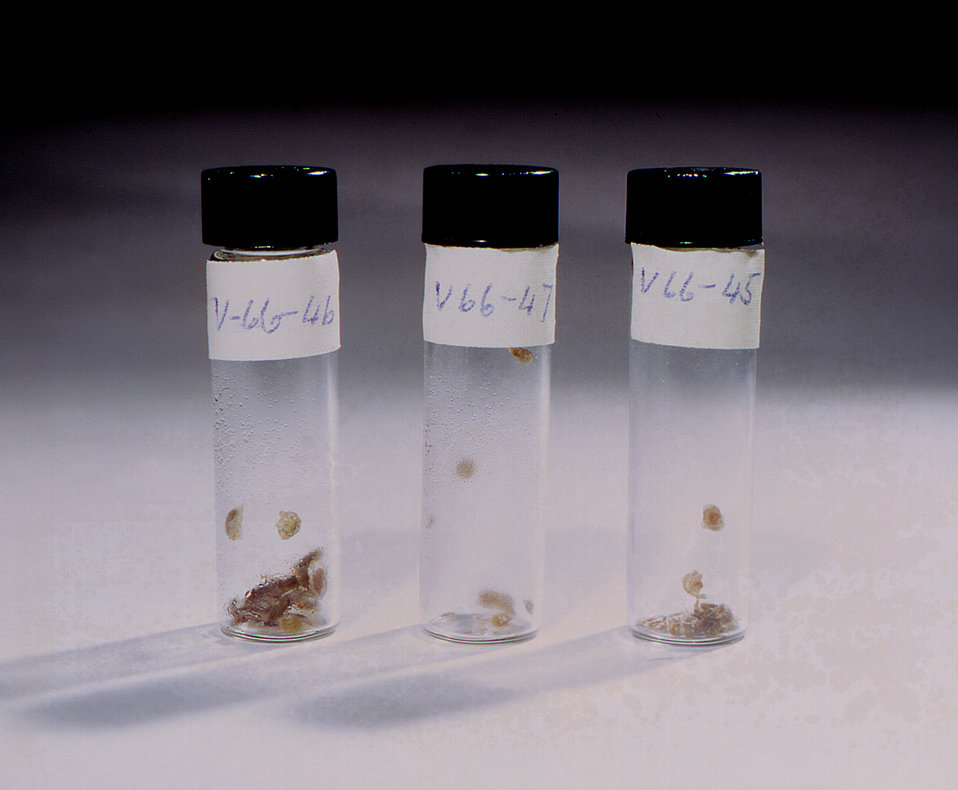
This 1966 image depicts three screw-top vials, each containing crusts, or scabs, collected from smallpox patients.